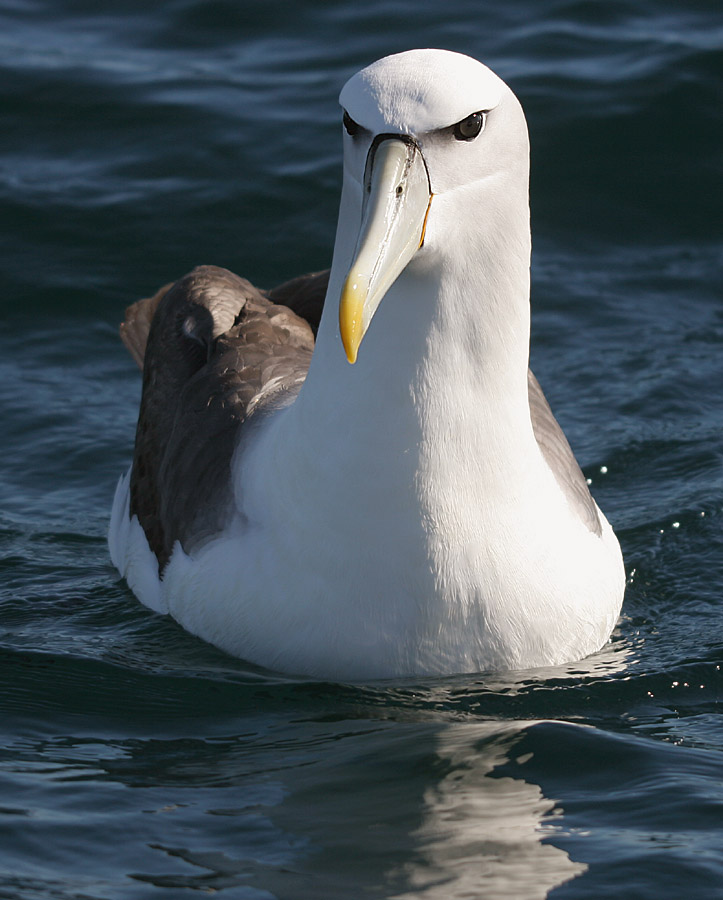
Shy Albatross, Thalassarche cauta, New Zealand. Author: Mark Jobling